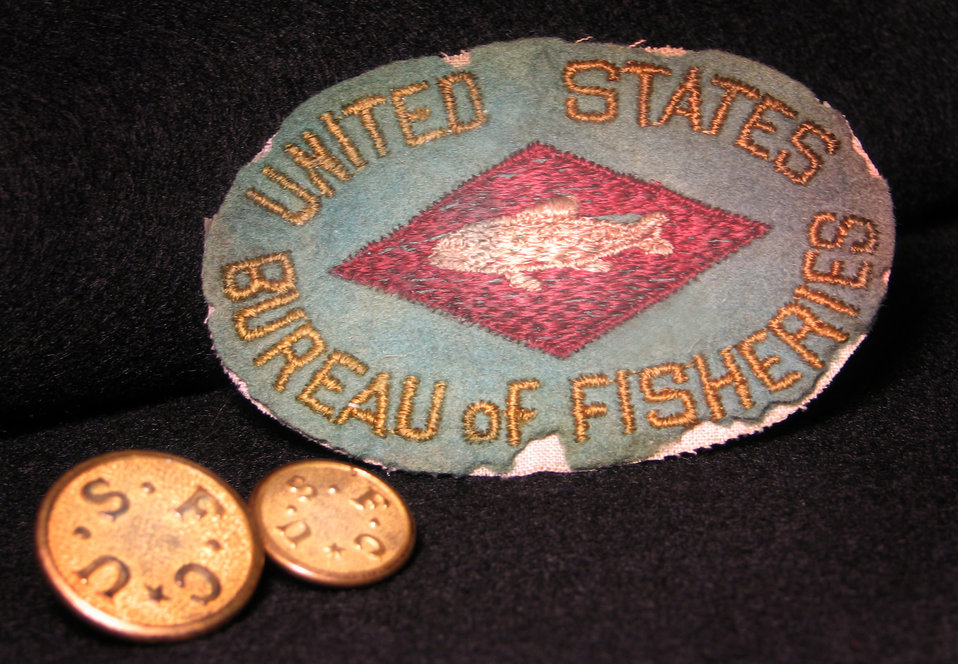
United States Bureau of Fisheries patch with United States Fish Commission buttons